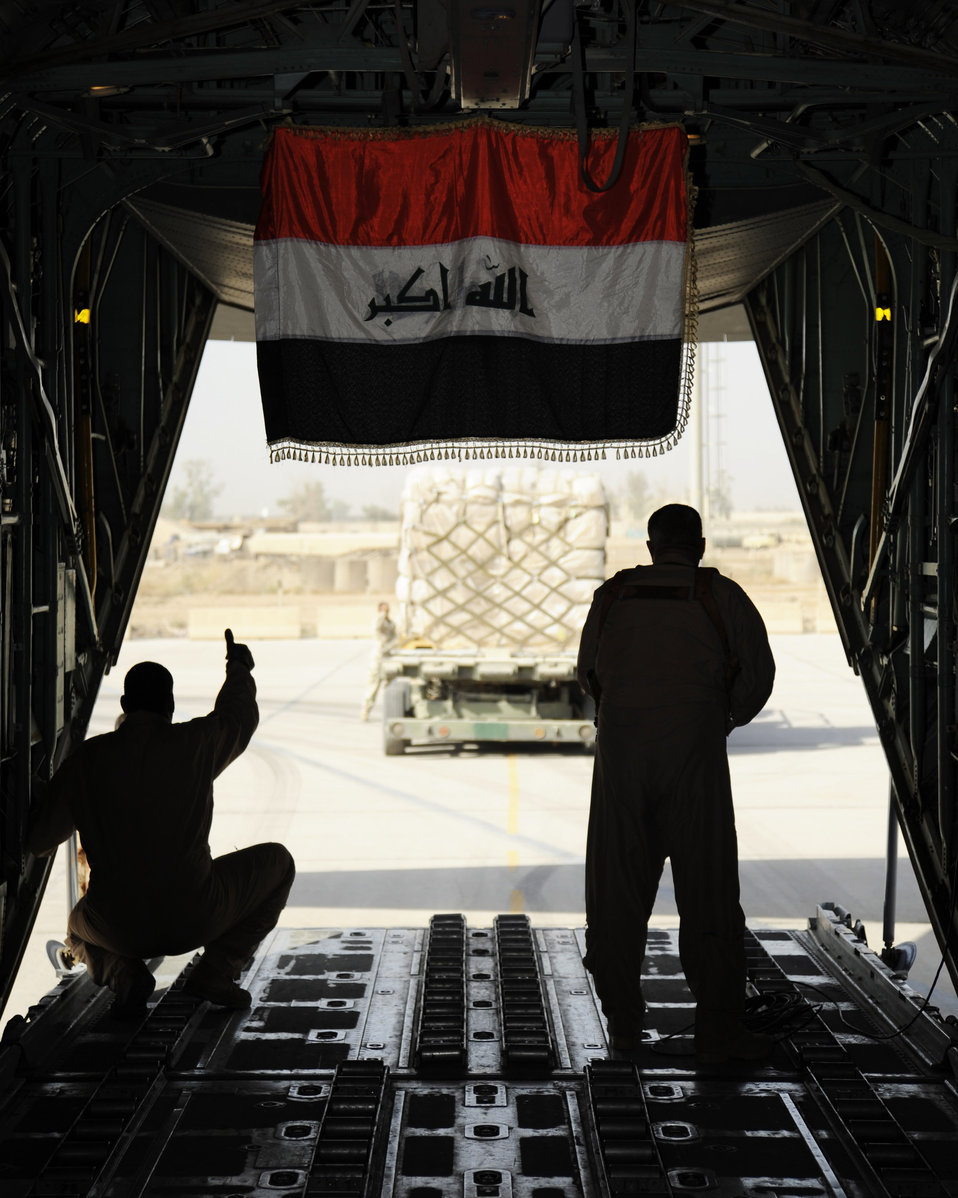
Iraqi relief

Iraq air force loadmasters guide a K-loader to an Iraqi C-130 Sept. 22 at an air base in Iraq. The cargo consists of wheelchairs, burn medicine, children's clothes and shoes for the first Iraqi air force C-130-supported humanitarian airlift to Najaf, Iraq. The supplies are to be donated to internally displaced Iraqis at Camp Al-Manathera.